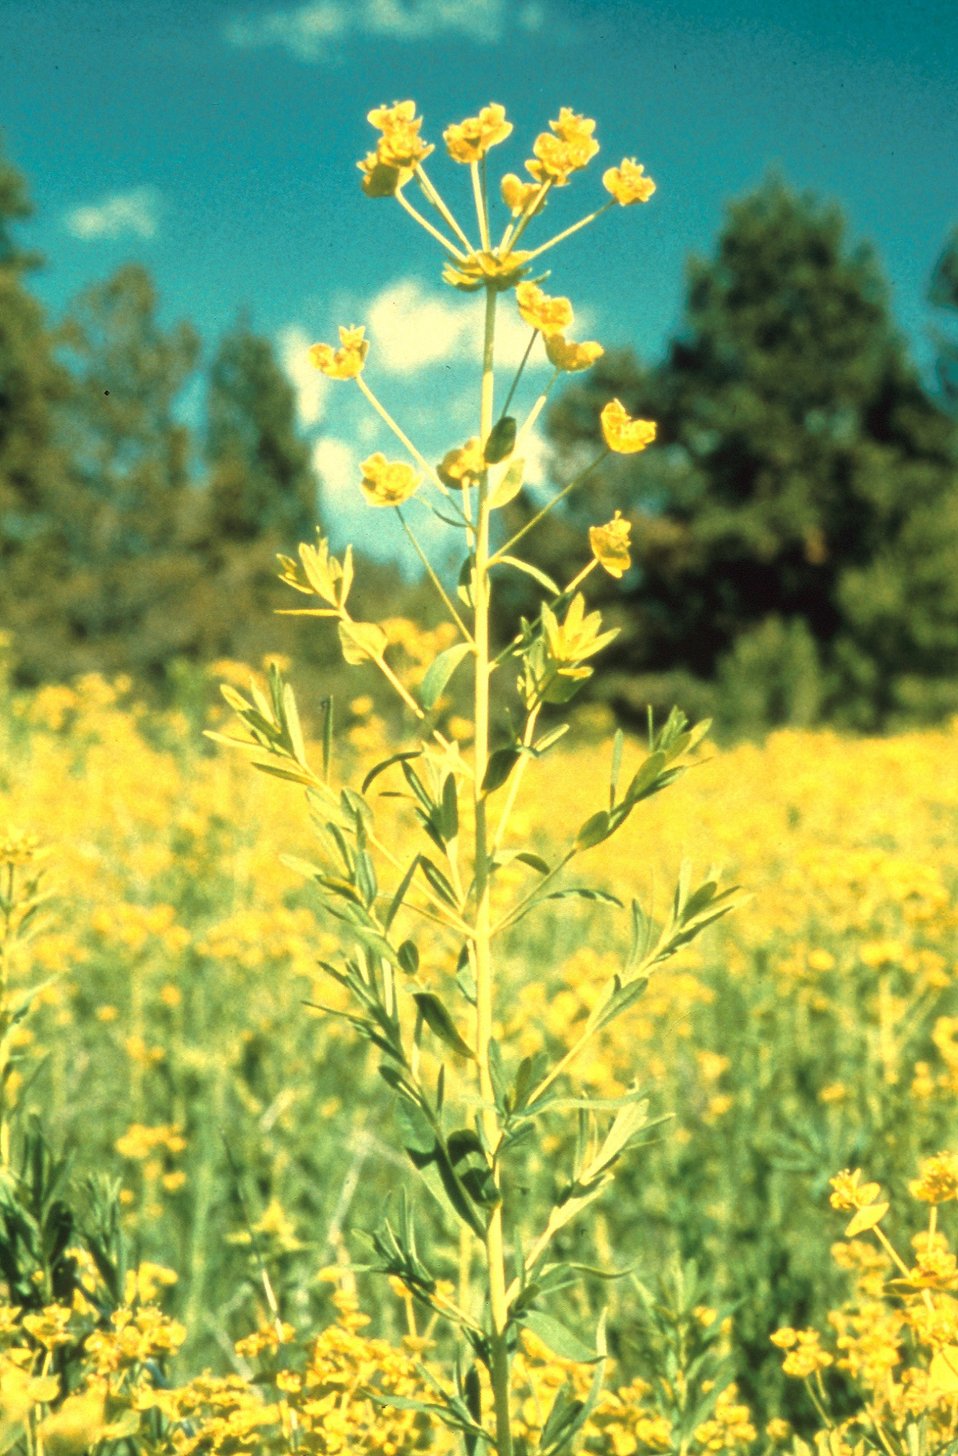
Leafy Spurge Idaho vegetation Plants in BLM